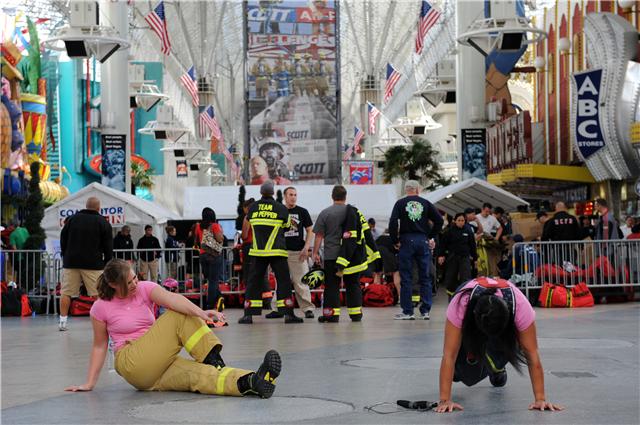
Warming up

Airman 1st Class Jessica Morehouse and Elaine Perkins stretch before they compete in the team relay event Nov. 18, 2009 at the Scott Firefighter Combat Challenge in Las Vegas. Airman Morehouse is assigned to the Air Force Academy and Mrs. Perkins, prior Air Force, is working as a civilian firefighter at the Air Force Academy, Colorado Springs, Colo.